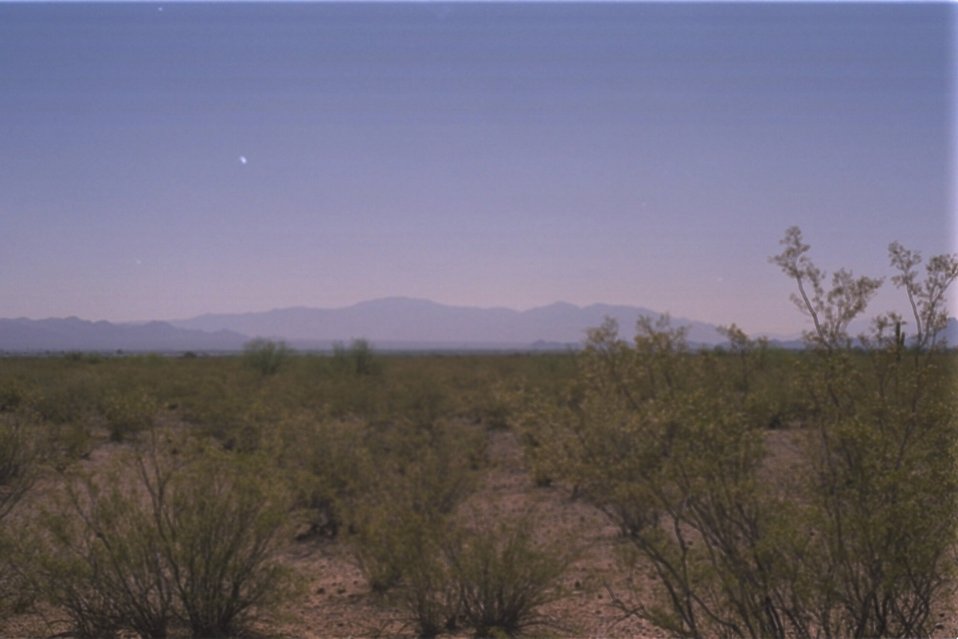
Sunset at the Ironwood Forest Naitonal Monument with mountains lining the horizen on Silverbell road. This pictuer shows the relation of the monument to the City of Tucson.